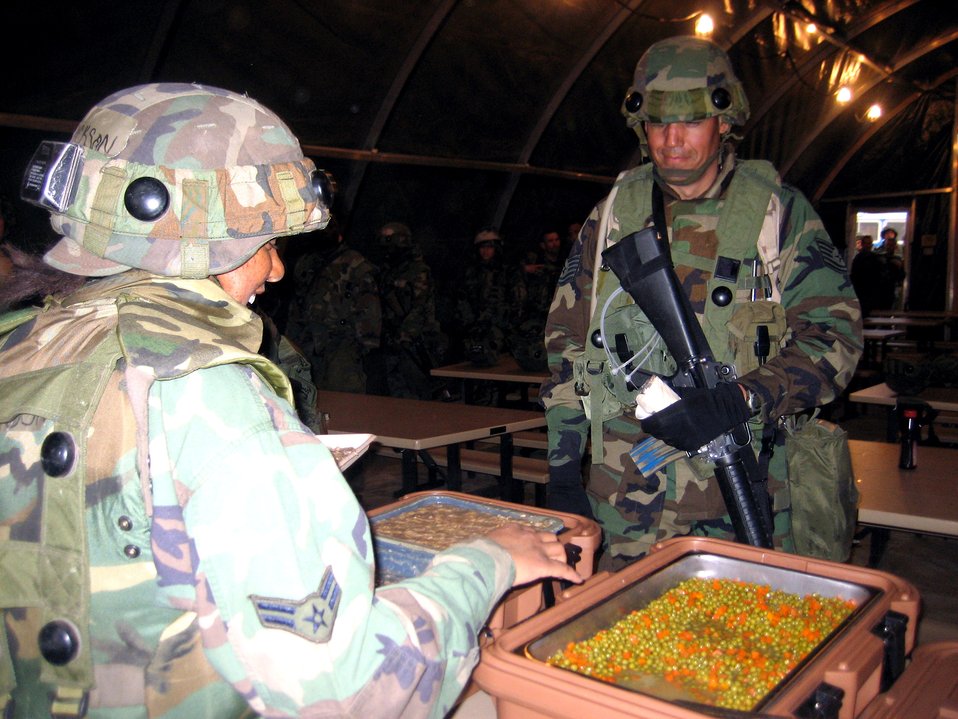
Services Airmen serve up real meals ready to eat

Services Airmen deployed to Air Force exercise Eagle Flag 07-4 serve up food to exercise participants April 25 during an evening meal at Naval Air Engineering Station at Lakehurst, N.J. Services members prepared the food in the Single Pallet Expeditionary Kitchen, or SPEK. During each Eagle Flag exercise, more than 30 services Airmen deploy to support the exercise operated by the Air Force Expeditionary Center's 421st Combat Training Squadron.